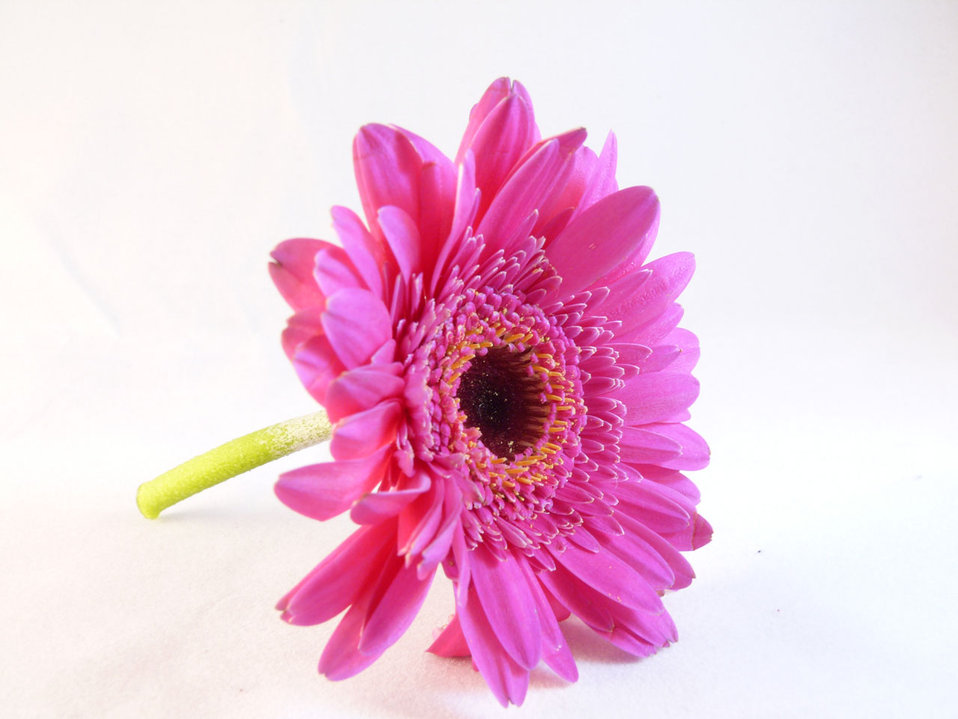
Flower on white backround.